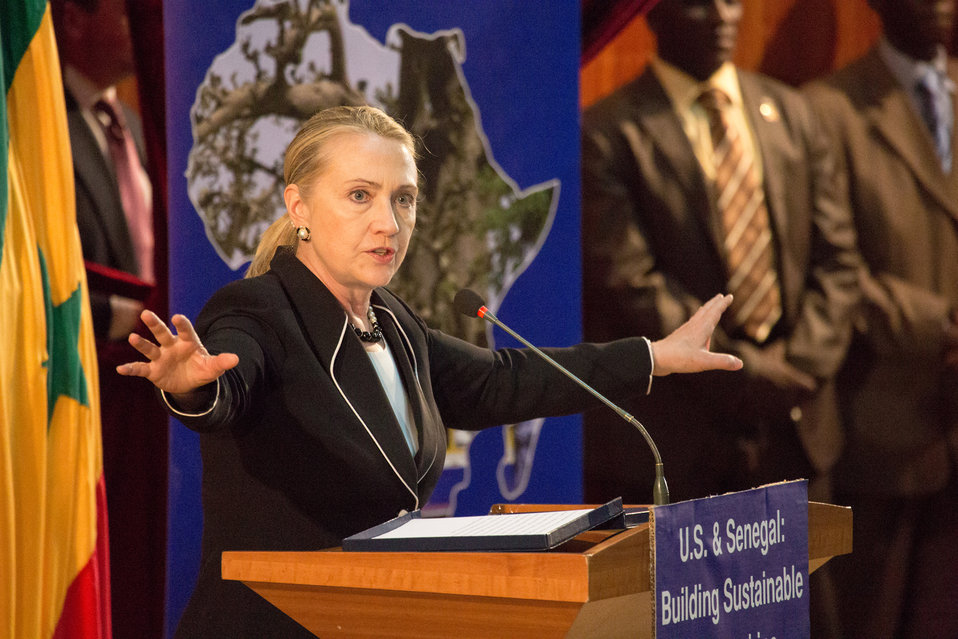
Secretary Clinton Delivers Remarks on U.S. and Senegal: Building Sustainable Partnerships

U.S. Secretary of State Hillary Rodham Clinton delivers remarks on the U.S. and Senegal: Building Sustainable Partnerships in Dakar, Senegal, on August 1, 2012.